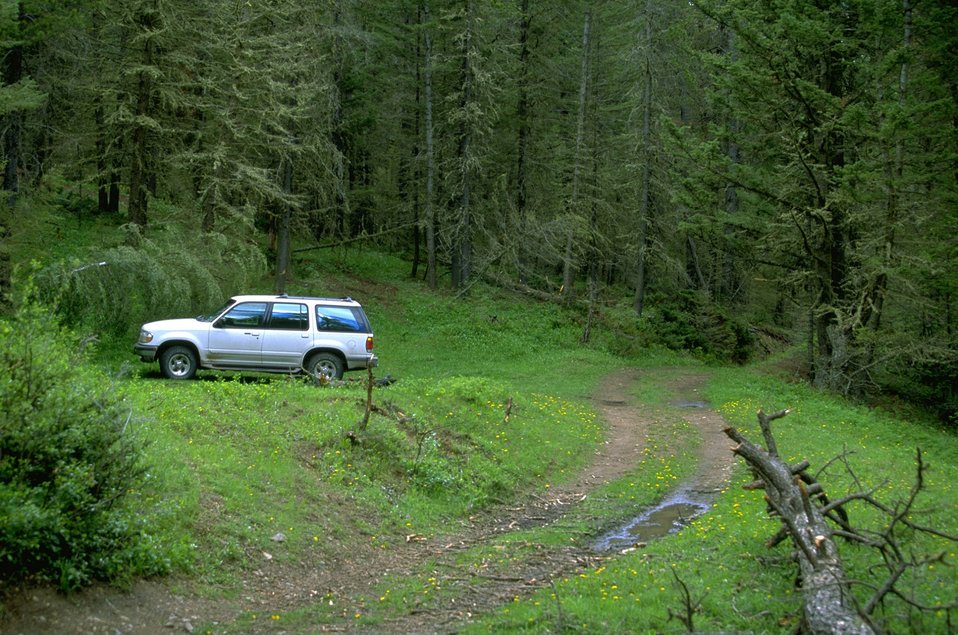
LimeKiln Canyon access road in the Judith Mountains